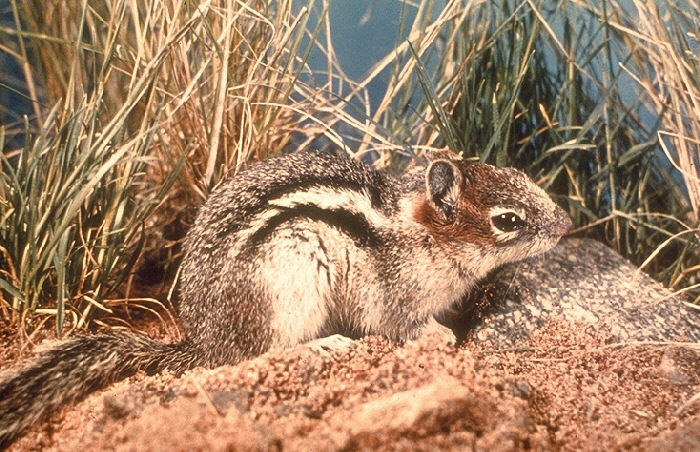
Golden mantled ground squirrel.